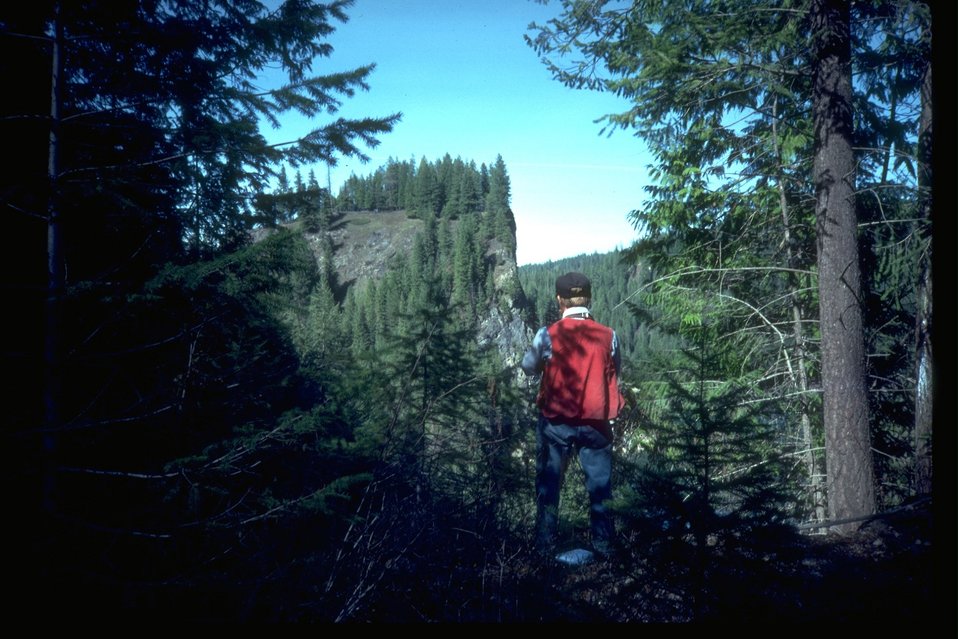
BLM forester cruises timber in Pend Oreille County, Washington